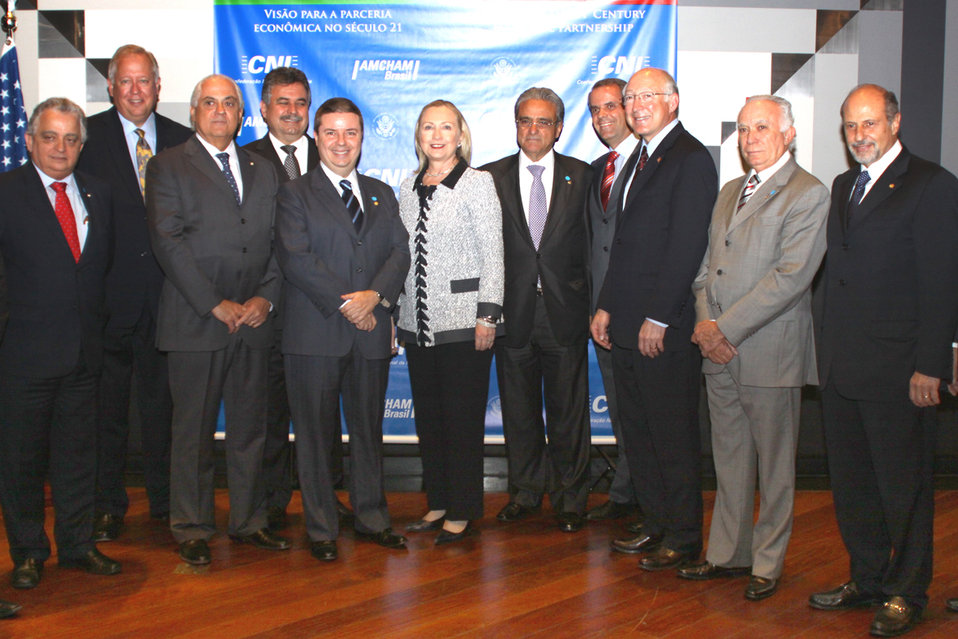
Secretary Clinton and Ambassador Shannon Pose for a Photo With Members of the Brazilian Business Community

U.S. Secretary of State Hillary Rodham Clinton, center; and U.S. Ambassador to Brazil Thomas A. Shannon, second from left; pose for a photo with members of the Brazilian business community at the National Council of Industries in Brasilia, Brazil, on April 16, 2012.